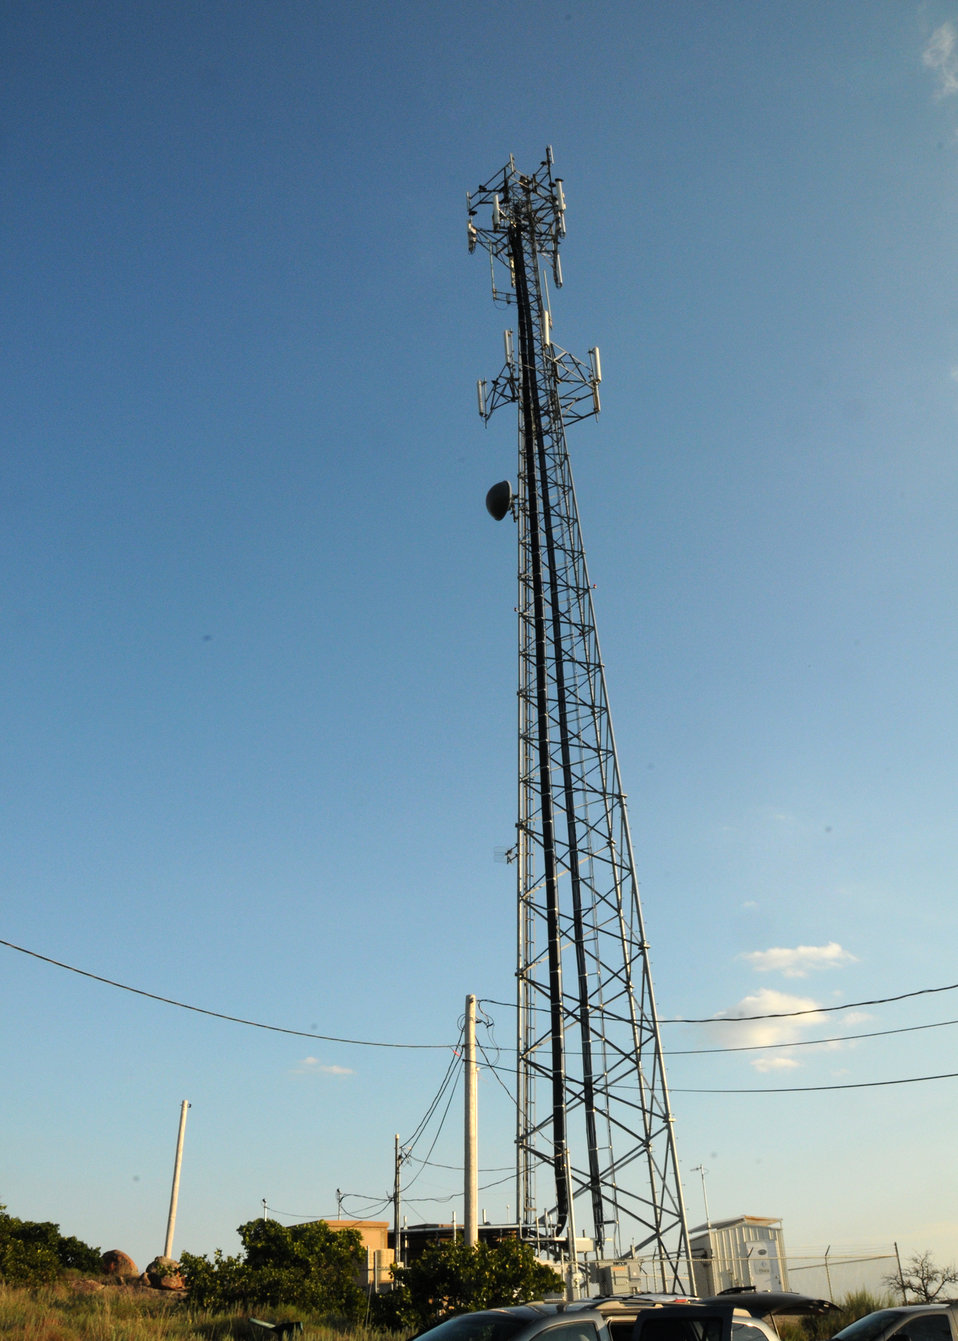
A new cell tower in Medicine Park, Oklahoma, services Commanche county.